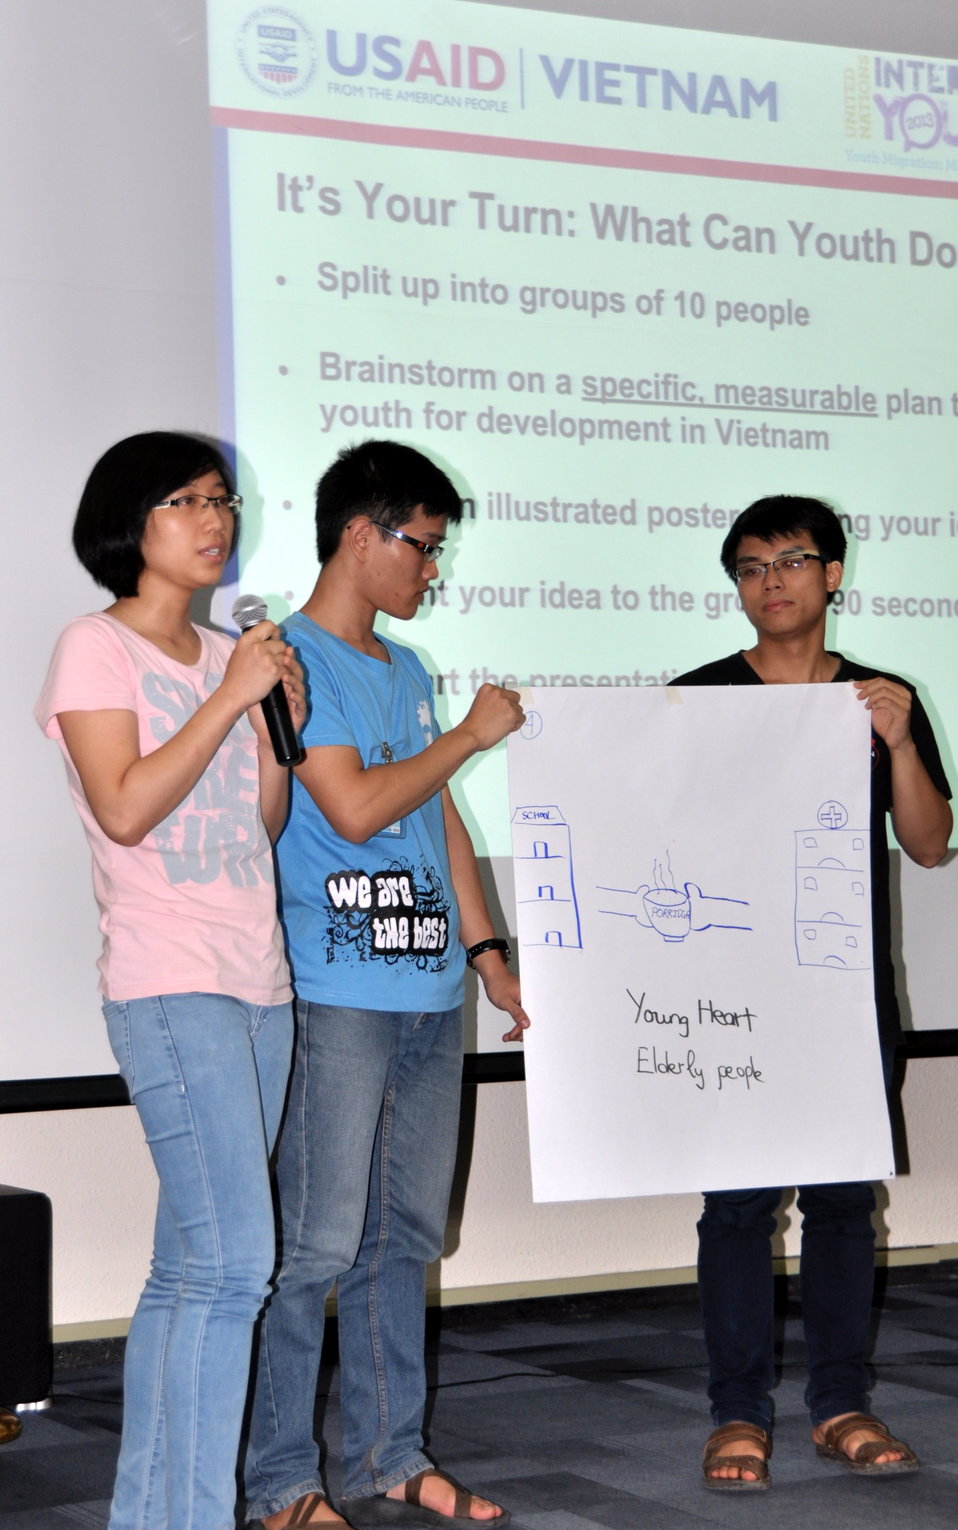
International Youth Day 2013: USAID hosts a lively discussion and group exercise on how youth can join in to advance development

Hanoi, August 12, 2013.